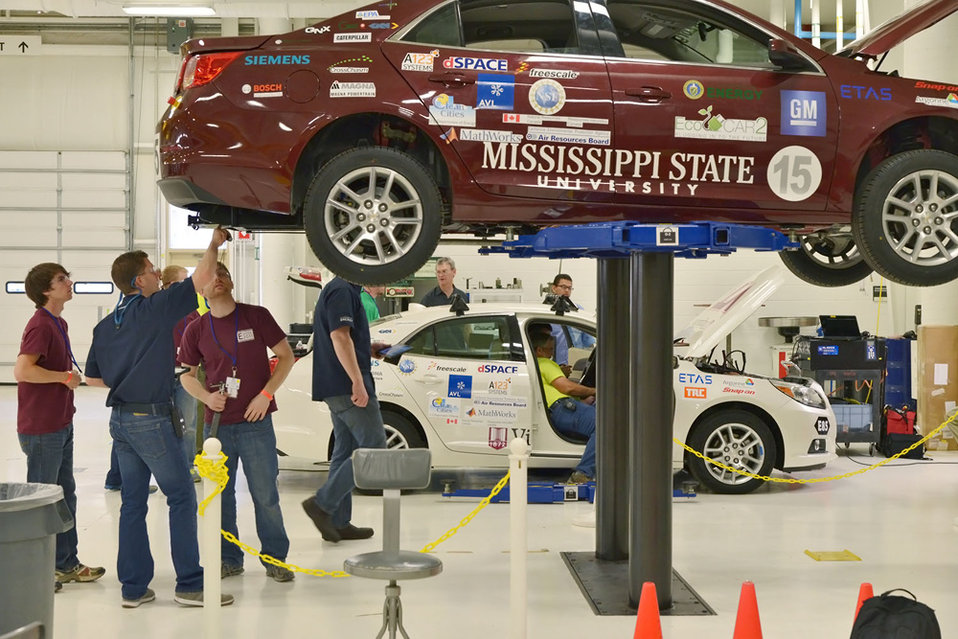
The team from Mississippi State University goes through a safety and tech inspection on their car at the Yuma Proving Grounds in Arizona. | Photo courtesy of EcoCAR 2.